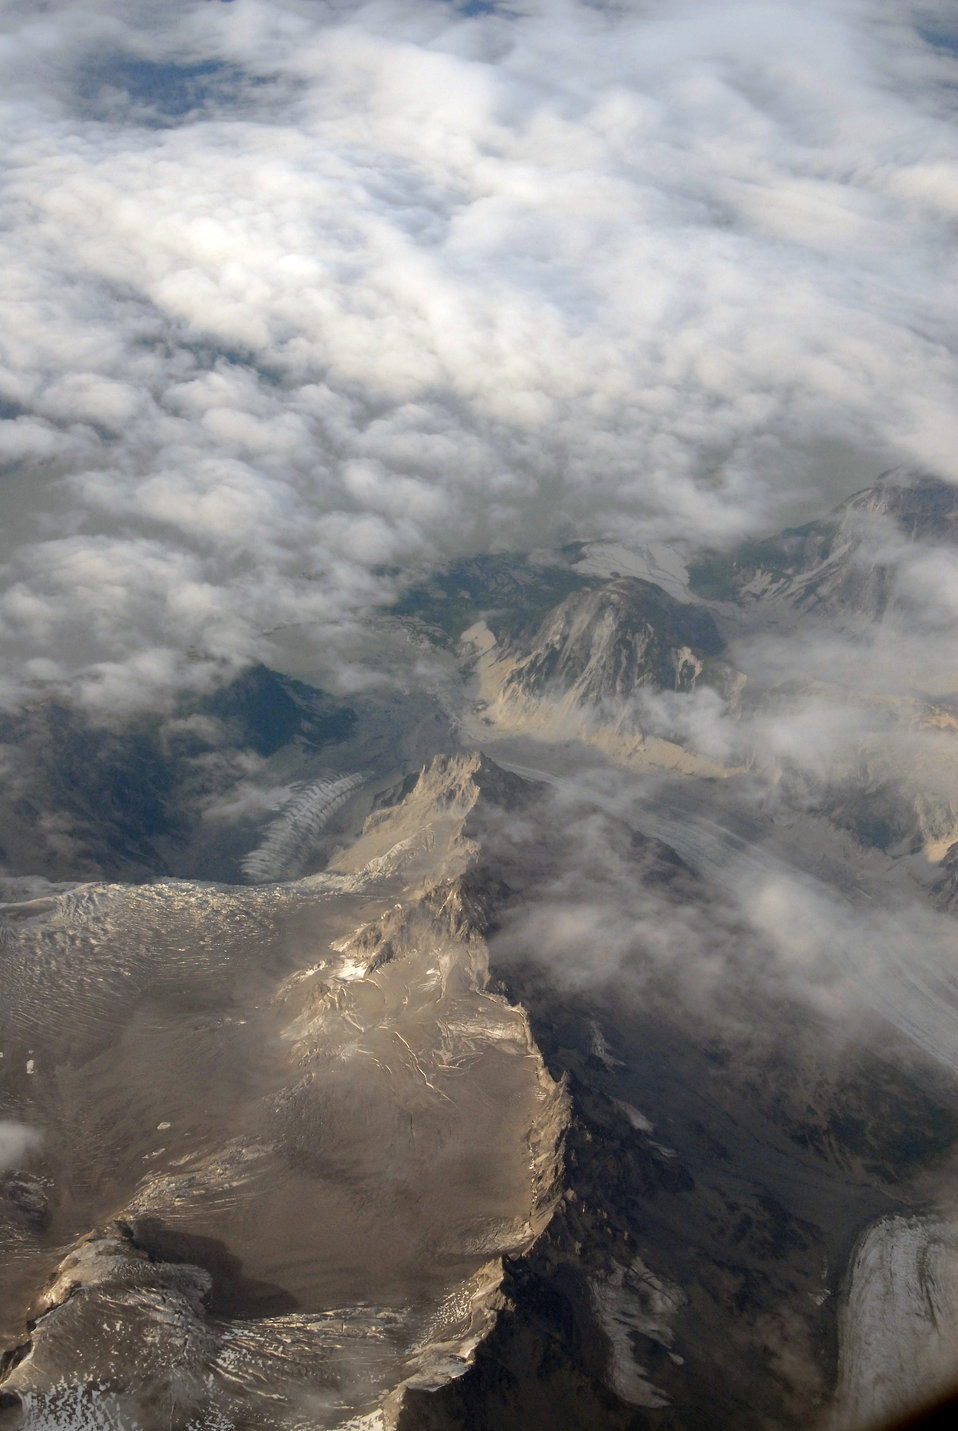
Rural Tour 0381

Rural Tour Alaska Aug 2009